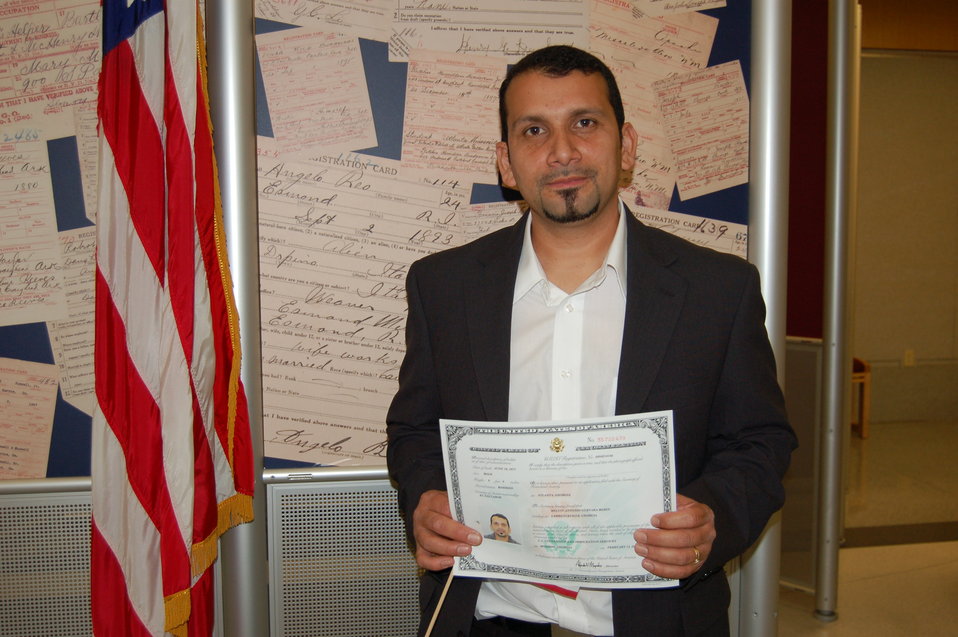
New Citizens